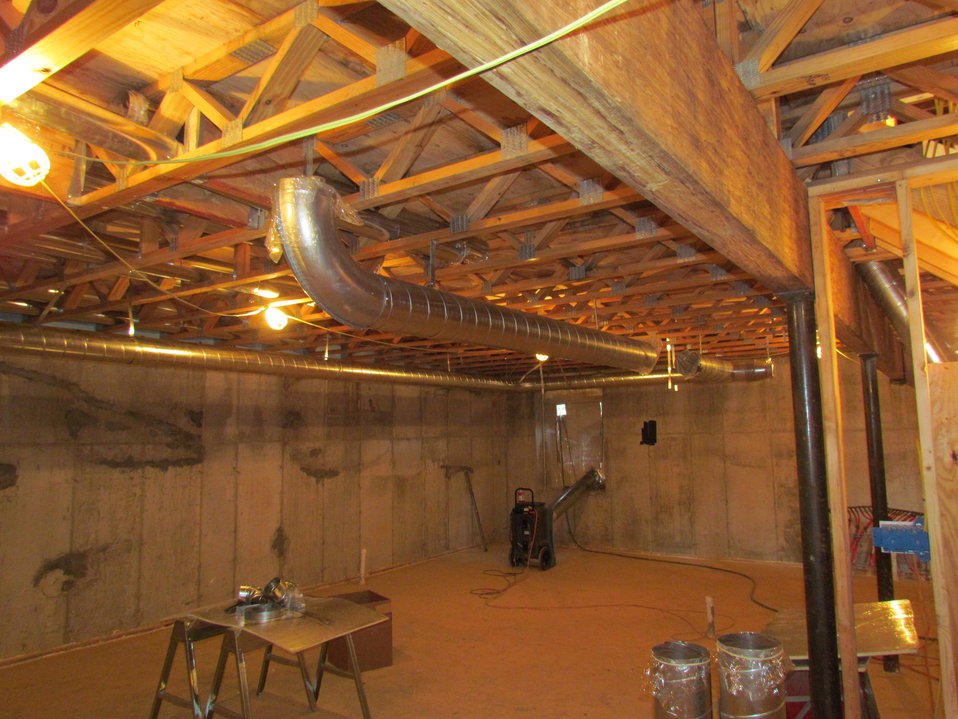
Net-Zero Energy Residential Test Facility - Photo showing duct work being installed in facility. Looking towards northwest corner of basement.